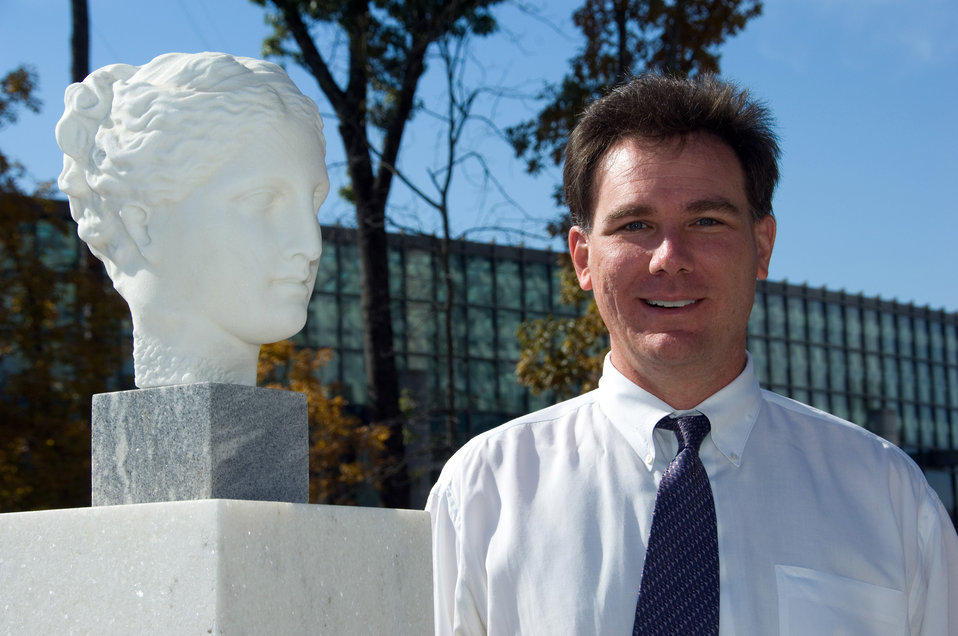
This photograph depicted John P. Anderton, Ph.D., M.P.A., standing along side the bust of the Greek muse of health, Hygiea, on the CDC's Roybal campus in Atlanta, Georgia. Dr. Anderton was the creator of the first CDC presence in the interactive, virtual world, Second Life, which is an online community also known as a 'metaverse'. He created the CDC avatar, Hygeia Philo, based on the Greek term for 'lover of health', in July 2006, in order to coincide with CDC's 60th anniversary.